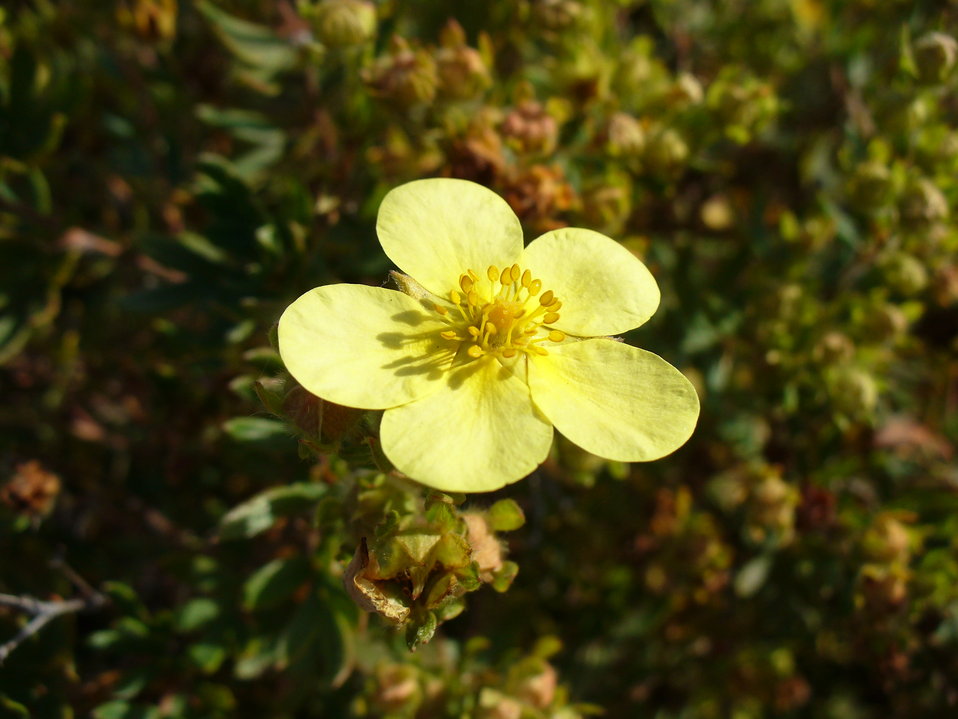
I am the originator of this photo. I hold the copyright. I release it to the public domain. This photo depicts a Dasiphora fruticosa flower.